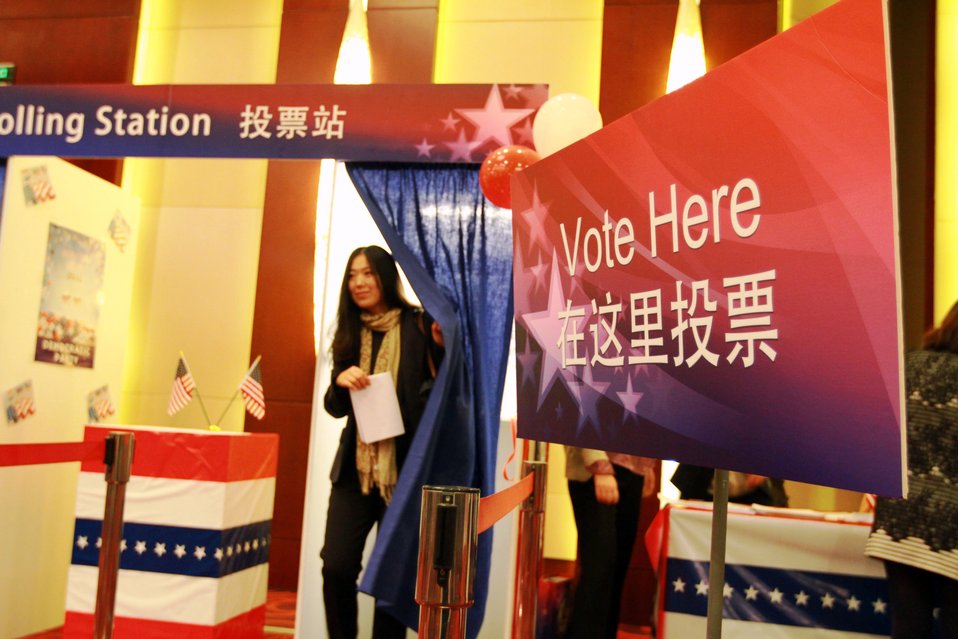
A Chinese woman exits the mock voting booth at the U.S. Presidential Election Results event at the U.S. Embassy in Beijing, China, November 7, 2012. [U.S. Embassy/ Beijing Press Office photo by Alison Anzalone/ Public Domain]